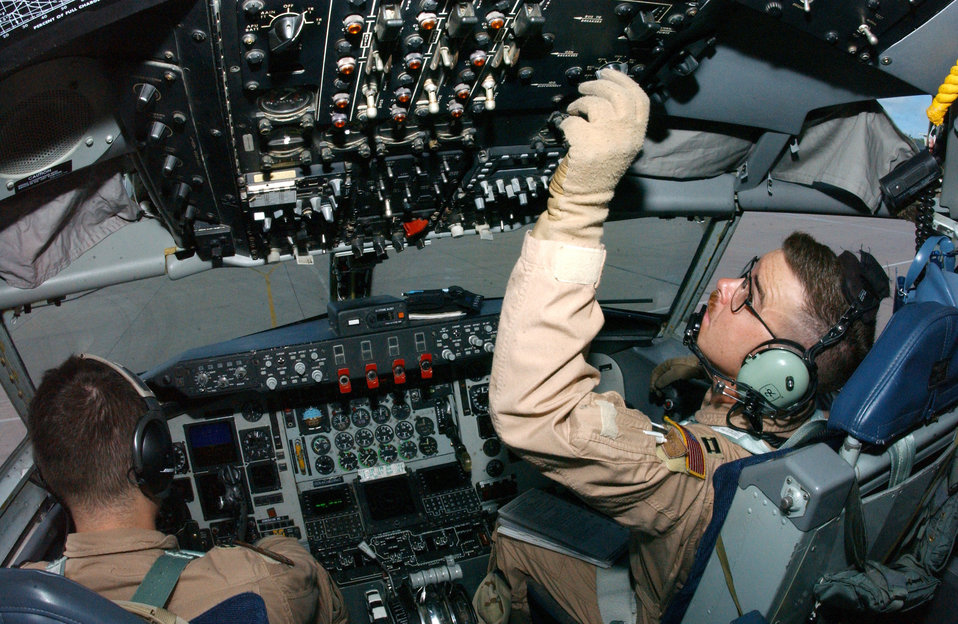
Preflight check

OPERATION ENDURING FREEDOM -- Capts. David Eisenbrey, left, and Ryan Budinko conduct preflight checks in a KC-135 Stratotanker before an air refueling mission at a forward-deployed location. Both are deployed to the 28th Expeditionary Air Refueling Squadron from the 905th Air Refueling Squadron at Grand Forks Air Force Base, N.D.